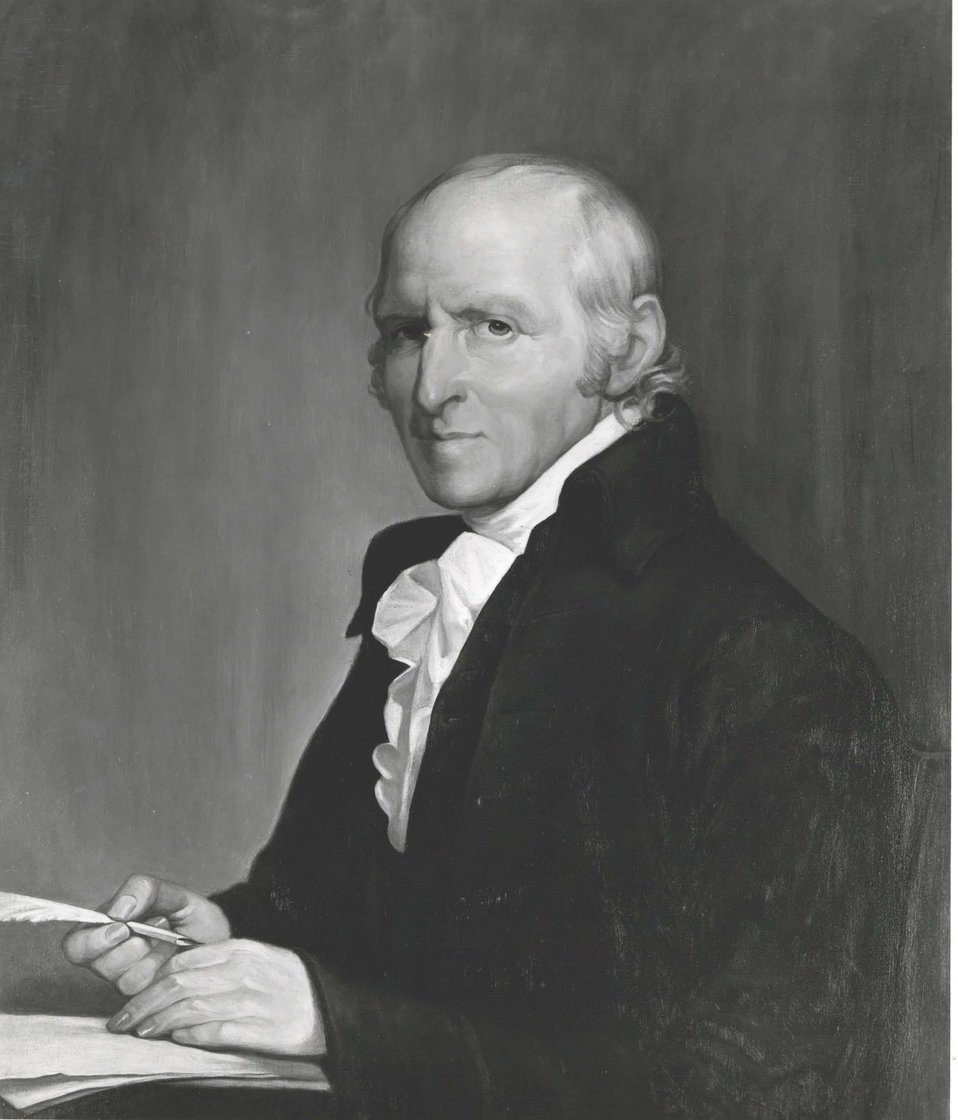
Thomas Pickering, U.S. Secretary of State, (ad interim August 20, 1795 to December 9, 1795) December 10, 1795 to May 12, 1800